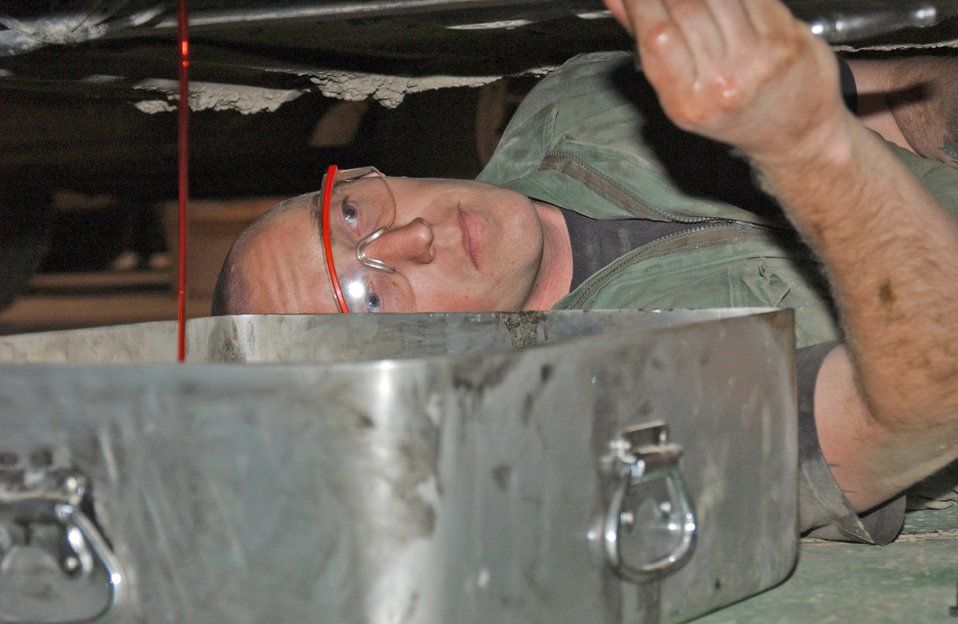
Needed maintenance

ALI BASE, Iraq (AFPN) -- Staff Sgt. Kevin Chandler checks a vehicle's underside while he drains fluid. Vehicle maintenance is a 24/7 operation here. The maintainers assign the highest priority to security forces vehicles because of their security missions. Staff Sgt. Kevin Chandler is a vehicle maintenance journeyman with the 407th Expeditionary Logistics Readiness Squadron.